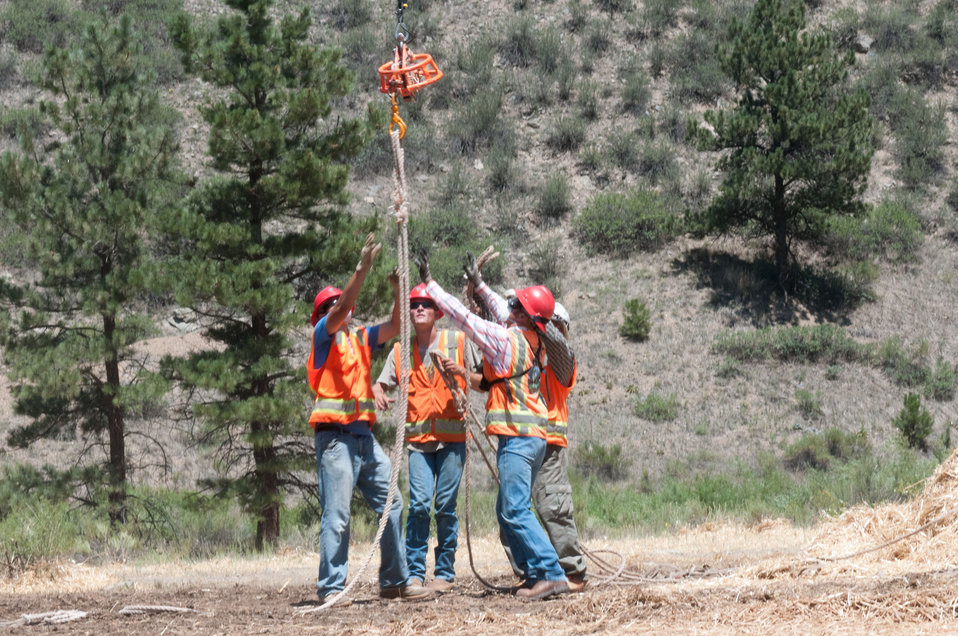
Load crews attach 100-150 foot ropes of a cargo net to a release mechanism hanging under a helicopter during the continuing aerial application of straw to mitigate soil and ash runoff from the mountainous terrain leading to Seaman Reservoir, drinking water resource for the City of Greeley, on Friday, July 20, 2012. Bell UH-1H (2-blade rotor) and A-Star Model B (3-blade rotor) aircraft were launched from a landing zone at the foot of the reservoir spillway. Pilots Randy Mason and Terry Richards in the Bell 204 and Tim Booth in the A-Star use their keen depth perception and piloting skills to keep their straw loads at the end of 100-150-foot cable above the trees and hilltops as they transport and release loads of certified straw weighing 1,400 – 2,000 pounds. 4-person load crews and heavy equipment operators with hydraulic hay fork grapple attachments make easy work of unloading 1,000 pound straw bales from tractor trailer rigs, stack them near the pickup point, then bring the bales onto cargo nets, open then loosen and adjust the load weight on the cargo nets for helicopters to lift and drop them onto barren, burned out tributary lands. Forest service lands received straw, while private and other lands receive a seed mix and straw to promote ground cover plant growth on ash-covered lands. In total, 1,800 tons of straw will be applied during the 14-day operation. One quarter of the cost was paid by the City of Greeley and the U.S. Department of Agriculture funded the remainder. The Hewlett Gulch Fire was started by a camper’s alcohol stove, on May 14, at the saddle of a picturesque mountain ridge along the Hewlett Gulch Trail of Poudre Canyon, in the Roosevelt National Forest, 60 miles north of Denver. At it’s more than 400 firefighters were battling fires being pushed by 50 mph winds that helped blacken over 12-square-miles of dry ground cover, brush and trees. Many of the trees were already dead and tinder dry from beetle-kill. The water in the reservoir remains clean and clear, while downstream water flow has gone from famous Colorado clear water to nearly black flows of water heavily laden with ash, silt, and burnt debris that recent thunderstorms have already washed down from the mountainsides.